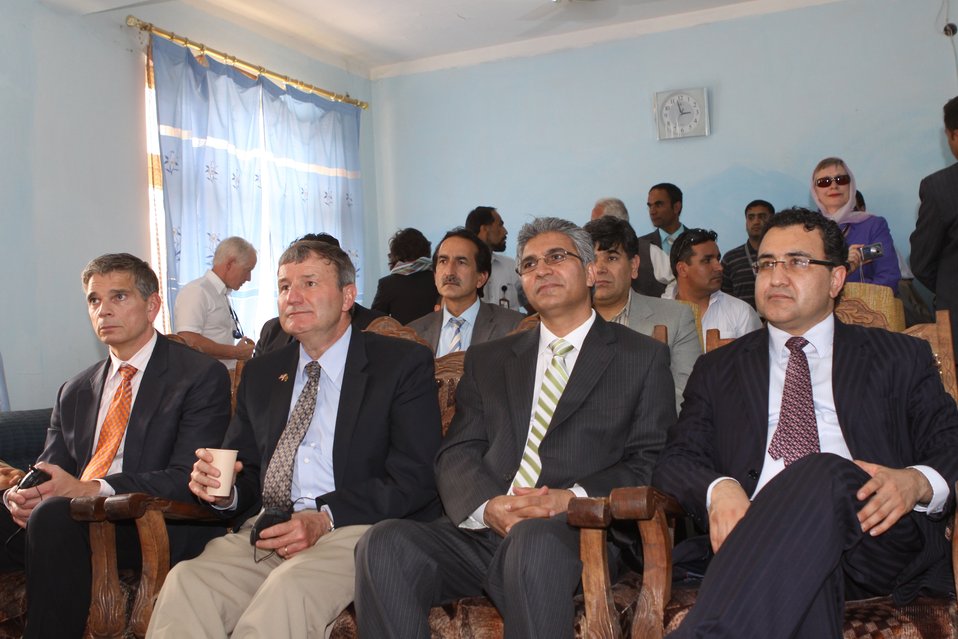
100525 Hirat Textile Company 721